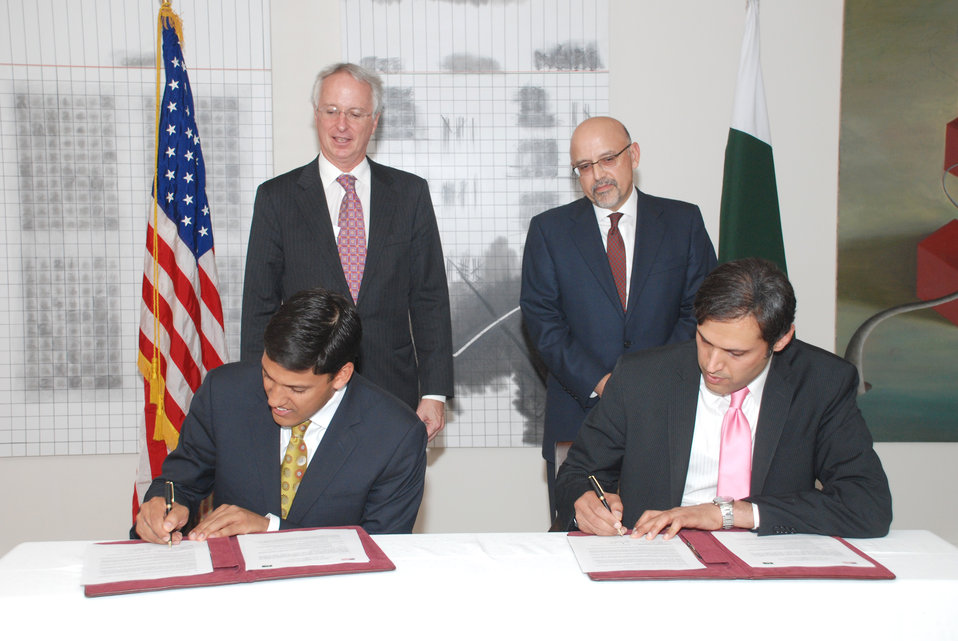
MoU Signing Ceremony between USAID and APF at Islamabad on April 18, 2012

MoU Signing Ceremony between USAID & APF and Dr. Rajiv Shah & Mr. Awais Khan is signing the MoU